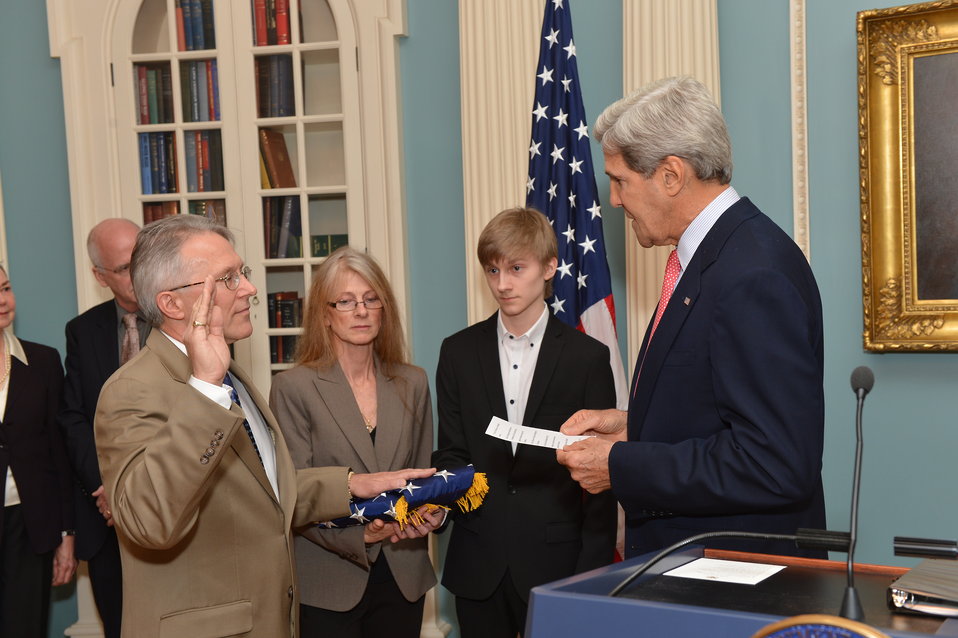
Secretary Kerry Hosts a Swearing-In Ceremony for Ambassador McCulley

U.S. Secretary of State John Kerry hosts a swearing-in ceremony for Terry McCulley as U.S. Ambassador to Cote d’Ivoire at the U.S. Department of State in Washington, D.C., on October 18, 2013.